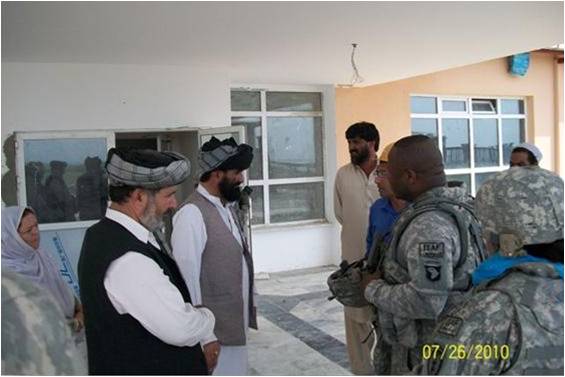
Provincial Council Reps Visit New Hospital Building, Ask Tough Questions